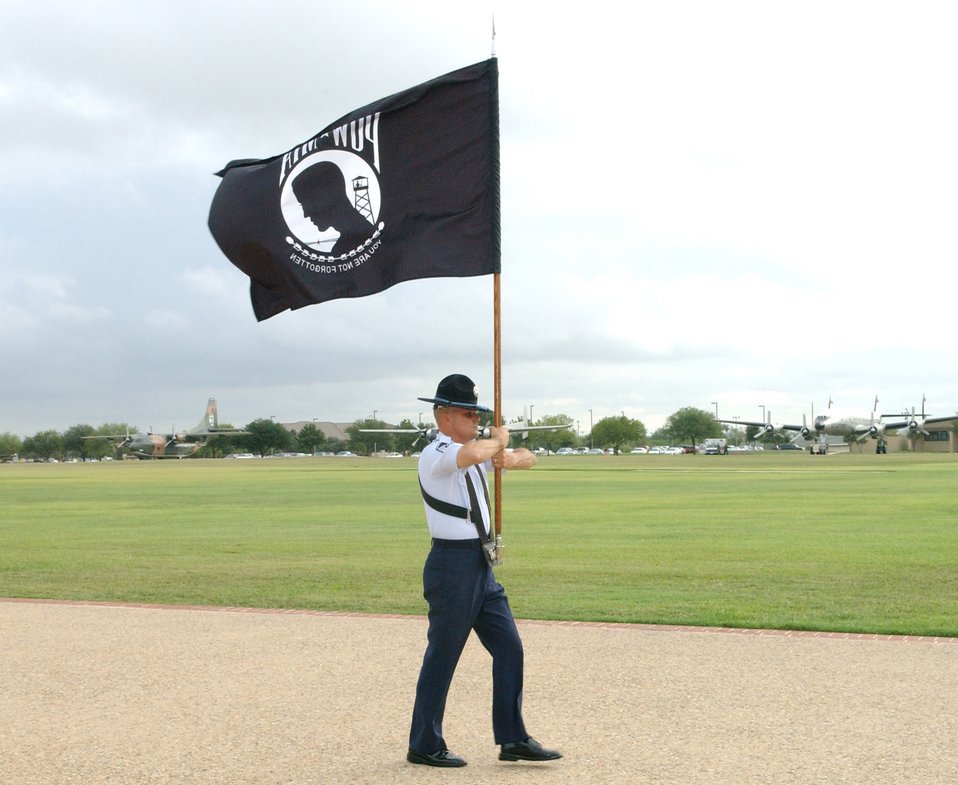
Basic training graduation ceremony focuses on POW/MIA Day

Master Sgt. Rodney Simington carries the POW/MIA flag during the basic military training graduation ceremony Sept. 15 at Lackland Air Force Base, Texas. The parade recognized POW/MIA Day where several former POWs joined the members of the 37th Training Wing as reviewing officials for the parade. Sergeant Simington is with the 323rd Training Squadron.